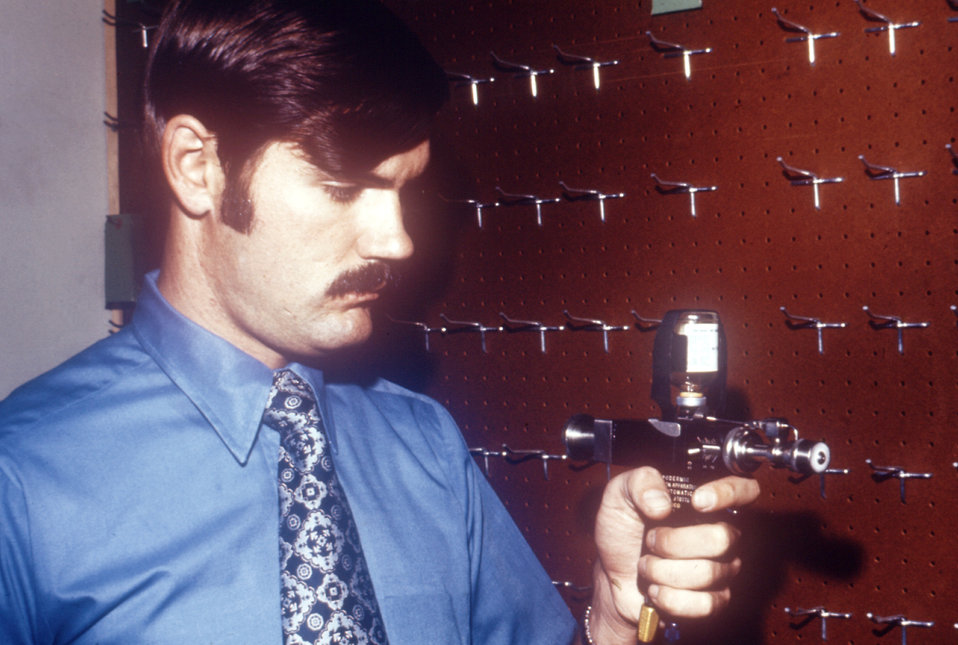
Here Tim Vann is holding a Ped-O-Jet� jet injector with a modified vial holder assembly used to vaccinate multiple patients.